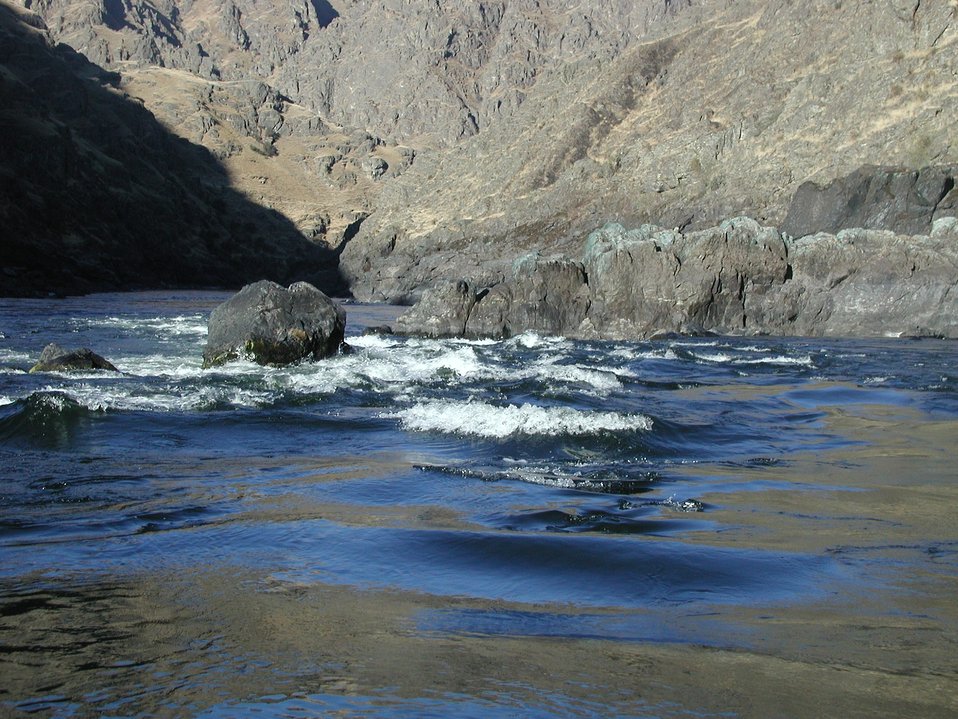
Recreation Rafting on Lower Salmon River Cottonwood Field Office UCSC Upper Columbia Salmon Clearwater District